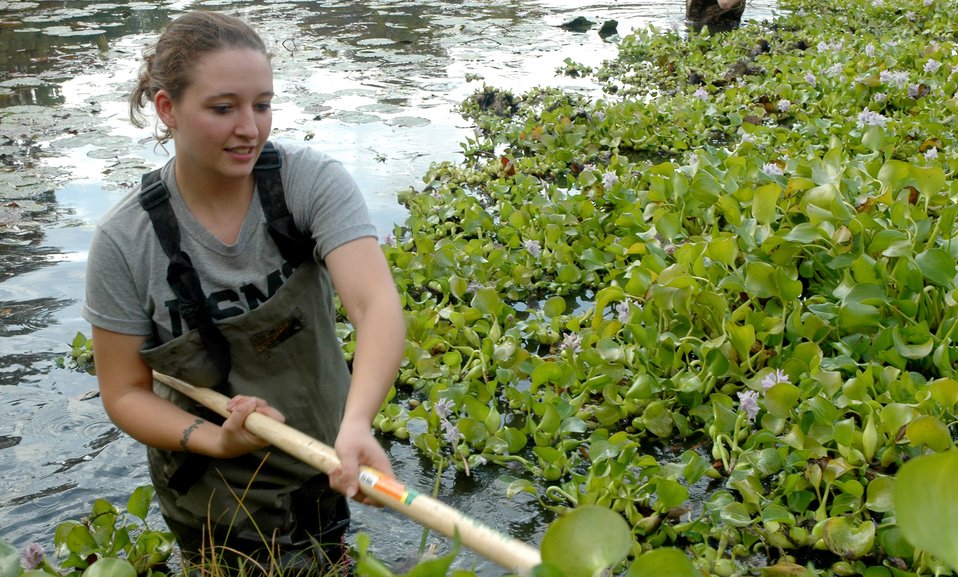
Servicemembers make a difference

Airman 1st Class Amber D. Spencer, 579th Medical Operations Squadron, removes water lettuce from a pond Oct. 25 at Kenilworth Aquatic Garden in Washington, D.C. Airman Spencer was one of 176 servicemembers who volunteered at the garden as part of a joint service project for national